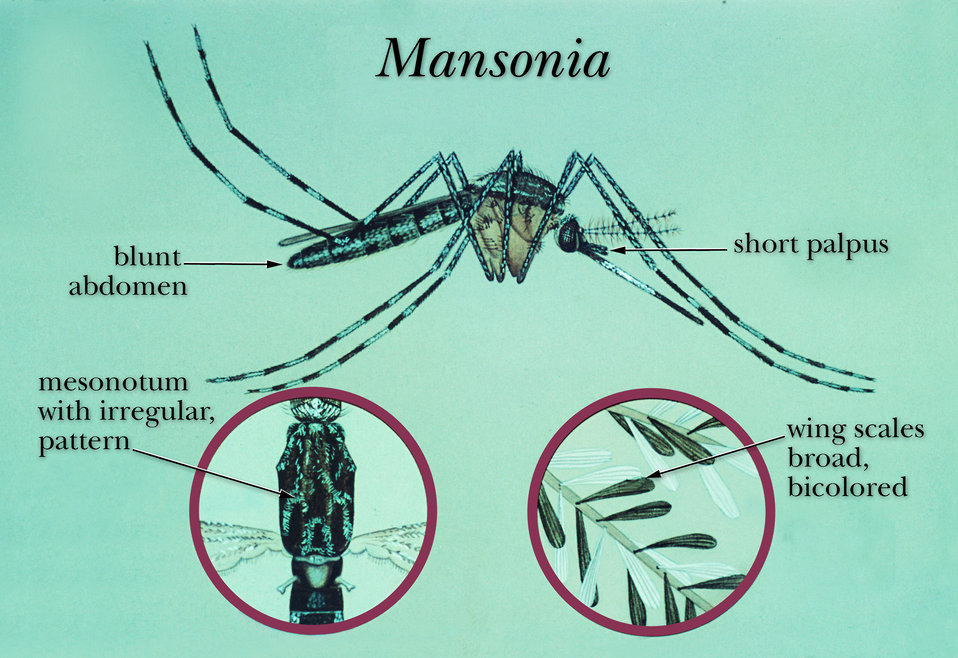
An illustration of a typical Mansonia mosquito.